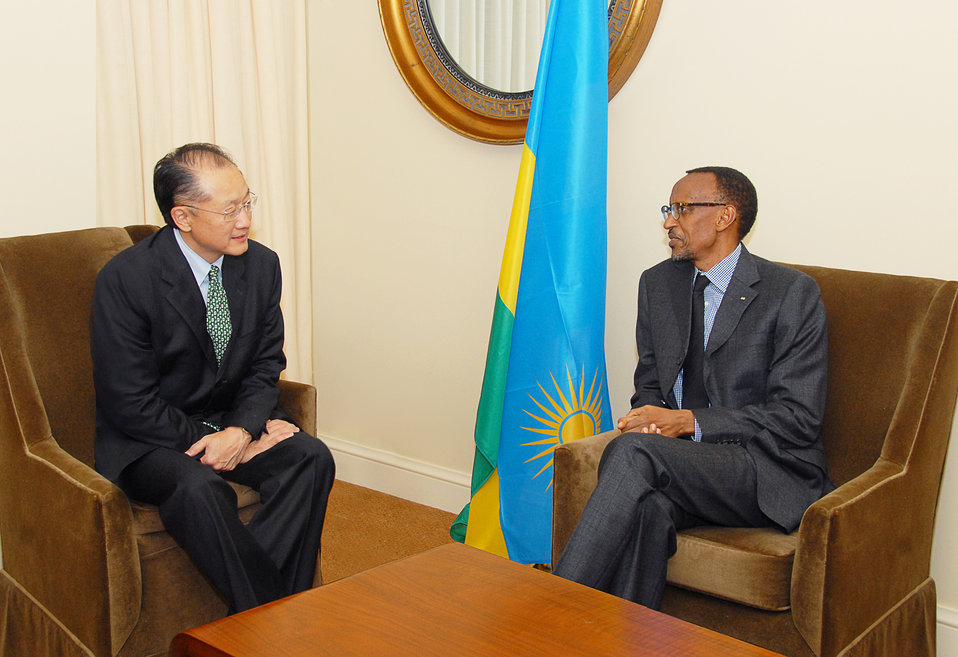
Dr. Jim Yong Kim meeting with Rwandan President Paul Kagame

President Obama’s nominee to the World Bank presidency, Dr. Jim Yong Kim, met with Rwandan President Paul Kagame Tuesday evening in Washington to discuss the importance of the World Bank’s role in reducing poverty and supporting development for global economic growth. “I was delighted to learn that Jim Kim has been nominated for this post, as he is a true friend of Africa and well known for his decade of work to support us in developing an efficient health system in Rwanda,” said President Kagame on Friday, March 23. “He’s not only a physician and a leader who knows what it takes to address poverty, but also a genuinely good person. President Obama’s nomination of Dr. Kim as President of the World Bank is a welcome one, and should resonate well with the many men and women who are working to transform lives around the world.'